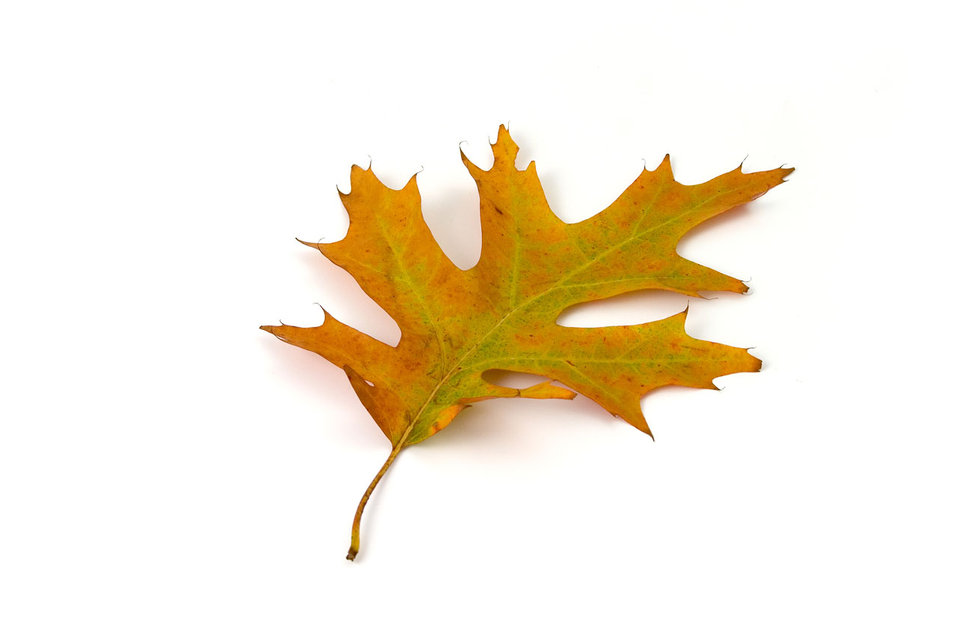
Red oak leaf

A single coloured northern red oak leaf on white background.